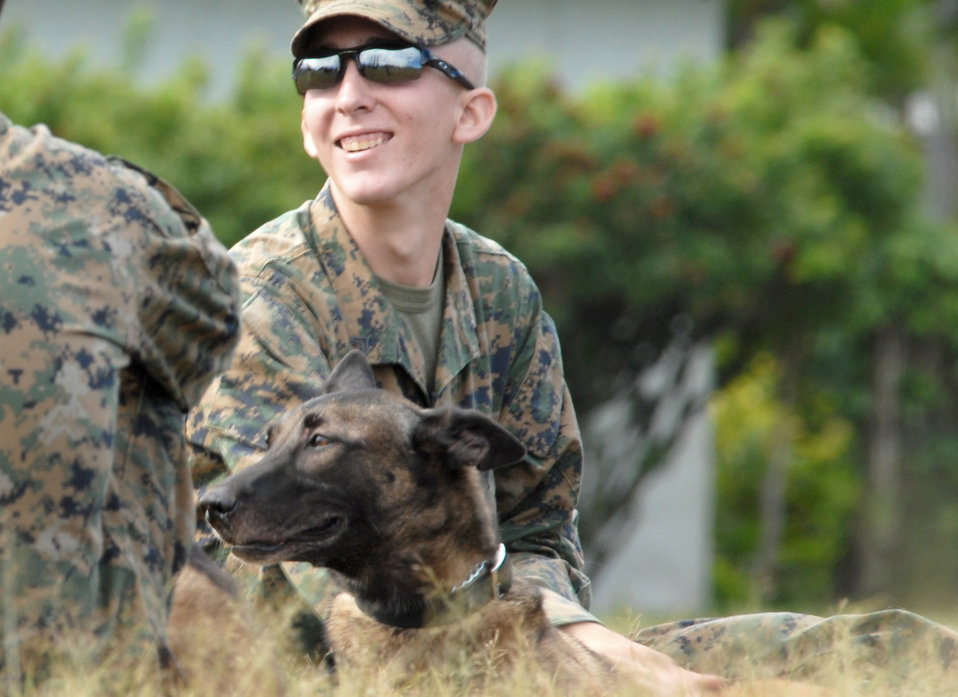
Working dog competition

Thirty-nine handlers from the Army, Navy, Marine Corps, Air Force and two civilian police departments brought their K-9s to the 2010 Hawaiian Islands Working Dog Competition Nov. 19, 2010, at Schofield Barracks, Hawaii. The competition which ran from Nov. 15 to 19 served to reward the dog teams for their hard work throughout the year and bring different services together.